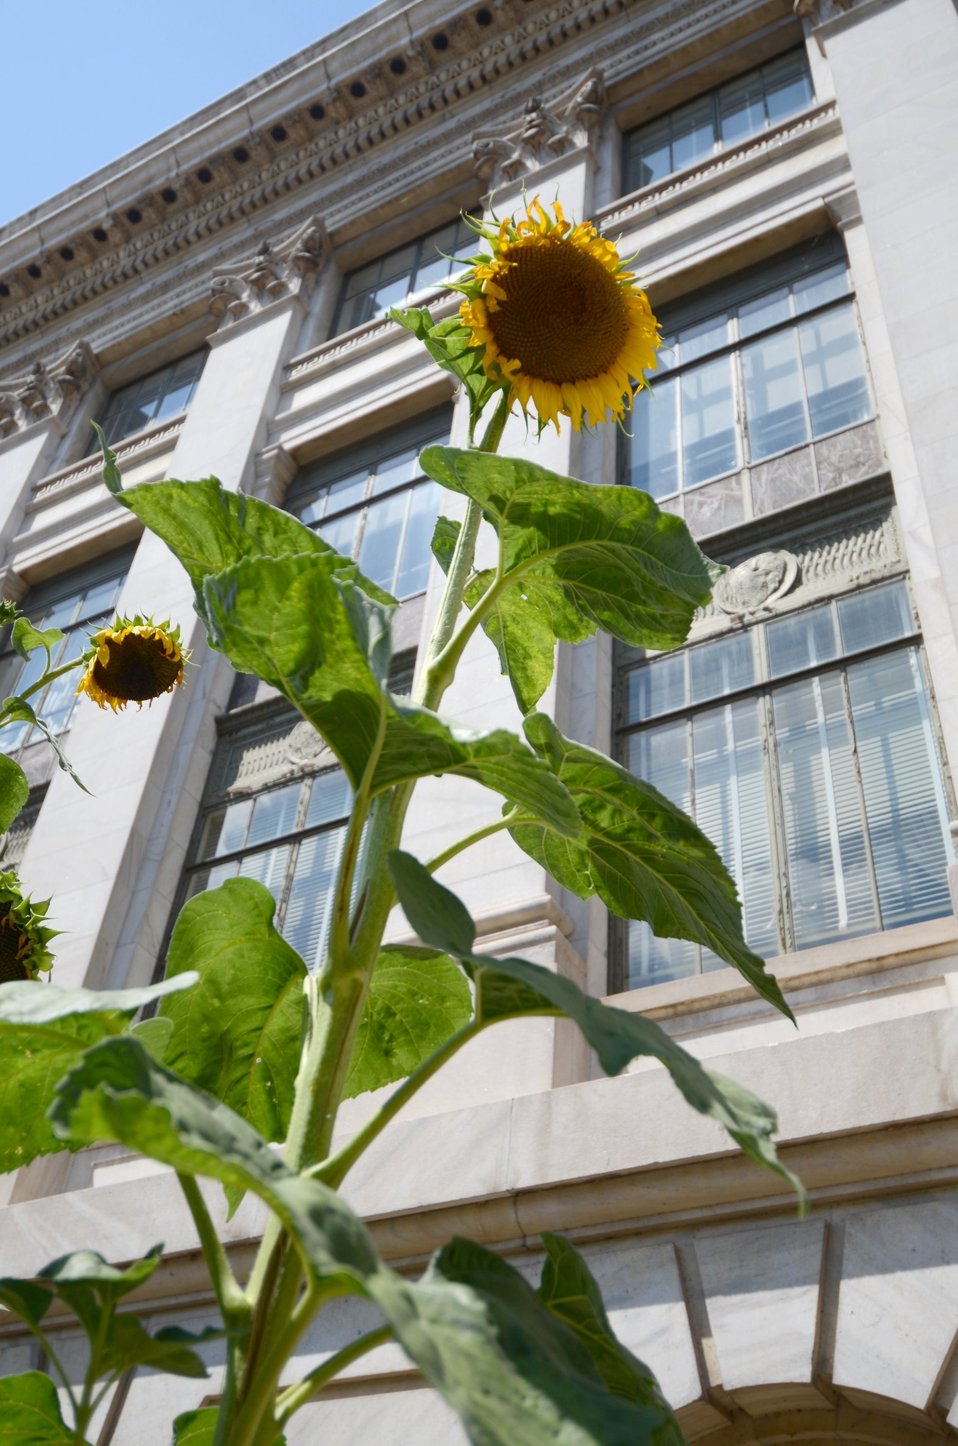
Sunflowers in the People's Garden at the Department of Agriculture, in Washington, DC, on Monday, August 1, 2011.